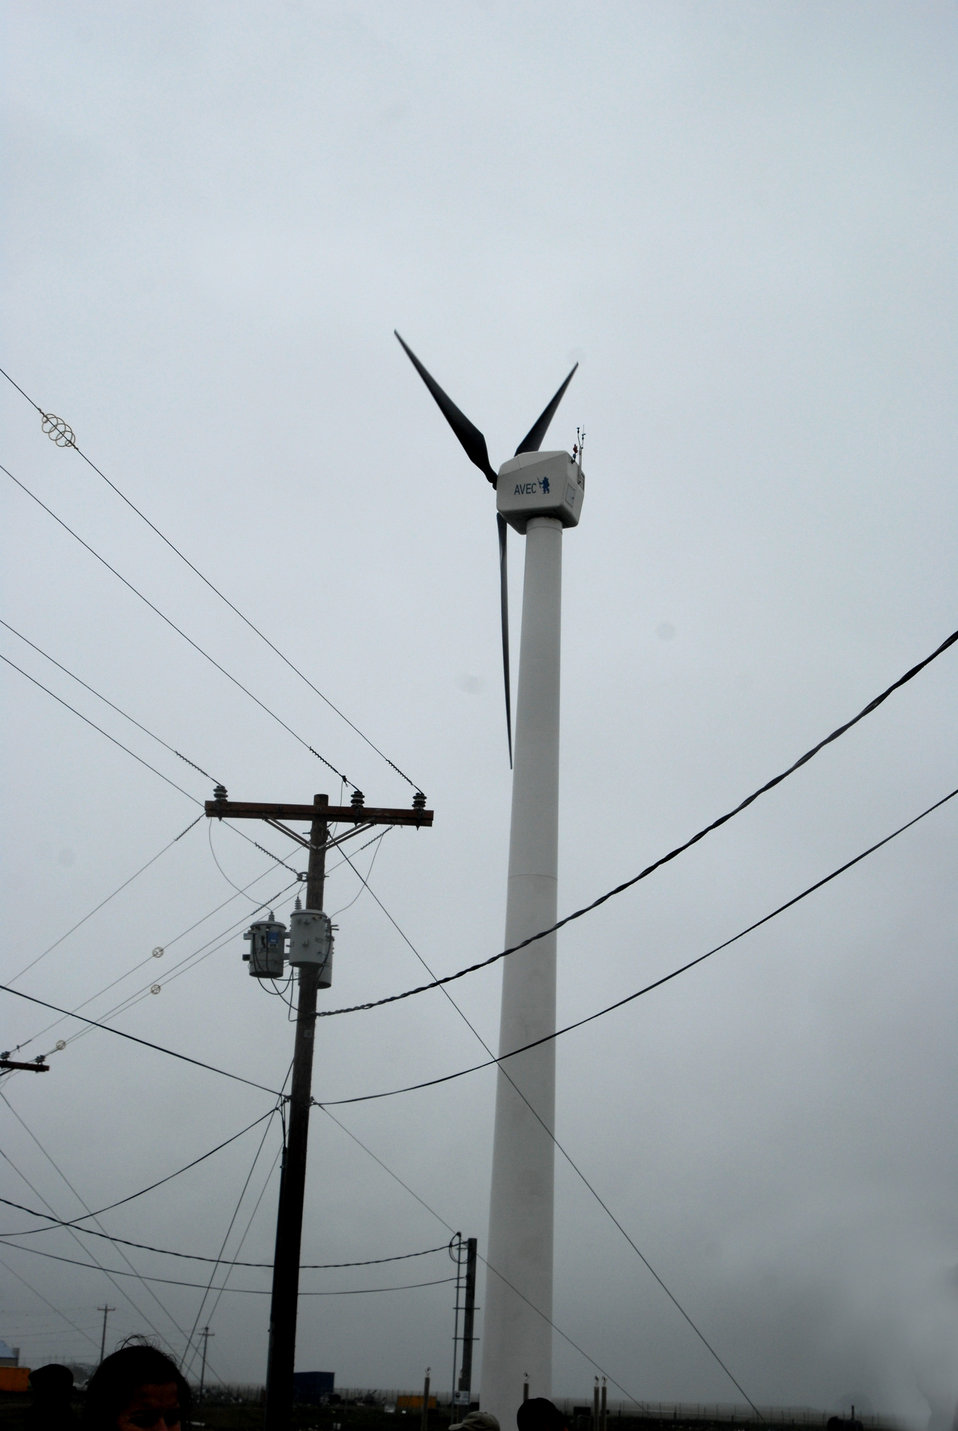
Rural Tour 4141

Rural Tour Alaska Aug. 2009